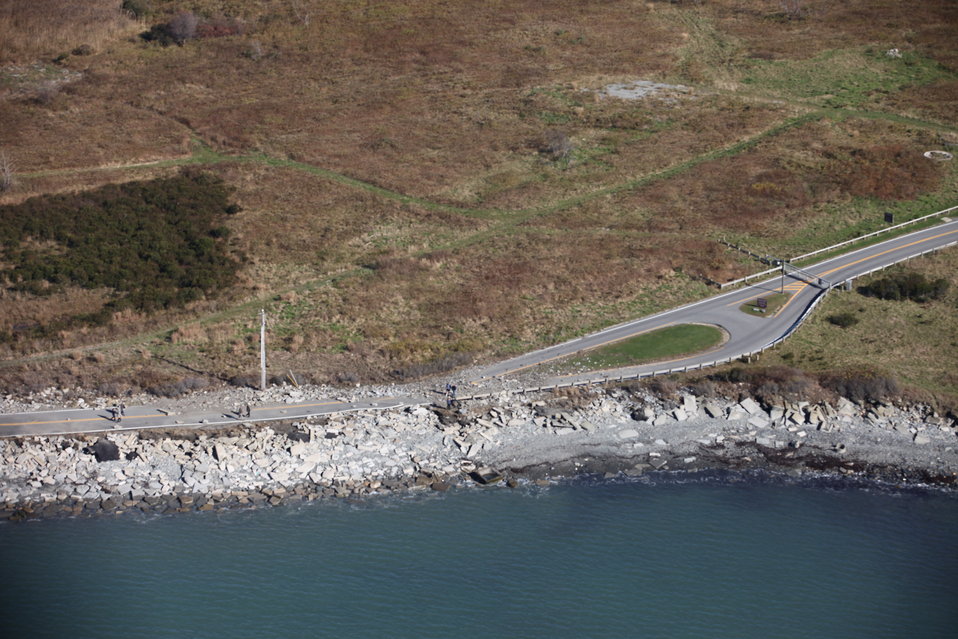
Debris on entrance road to Sachuest Pond National Wildlife Refuge (RI)

Road debris and over wash at entrance gate to Sachuest Point National Wildlife Refuge and Kettle Pond Visitor Center in the aftermath of storm Sandy.